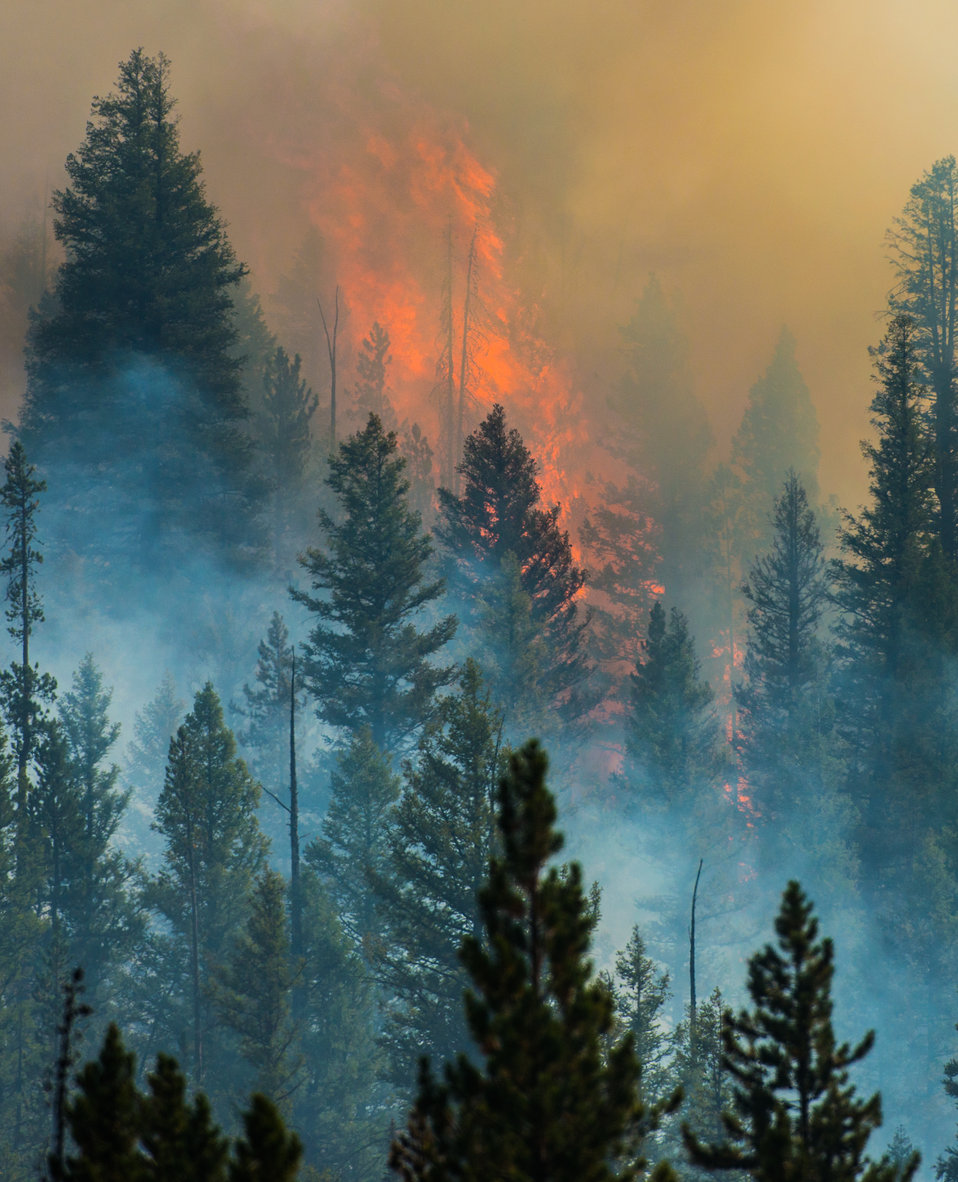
Structure protection, burnout of roads and natural barriers will help slow the progression of the main fire in the East Fork of Baker Creek, in the Sawtooth National Forest, during the Beaver Creek Fire, northwest of Hailey, ID, on Tuesday, Aug 20, 2013. Many homes are nestled in thick groves of trees. Feller and skidders are used to thin the density of trees close to homes.